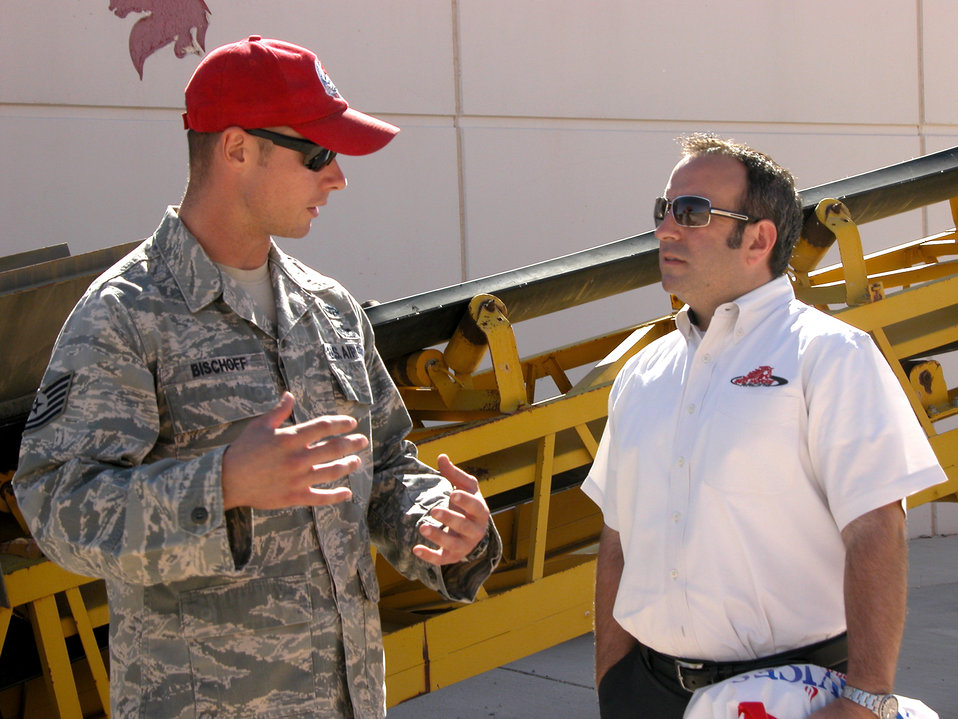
RED HORSE meets its NASCAR

Tech. Sgt. Jason Bischoff (left) from speaks with Kevin Ray during a base visit here Sept. 24, 2010, at Nellis Air Force Base, Nev. The two